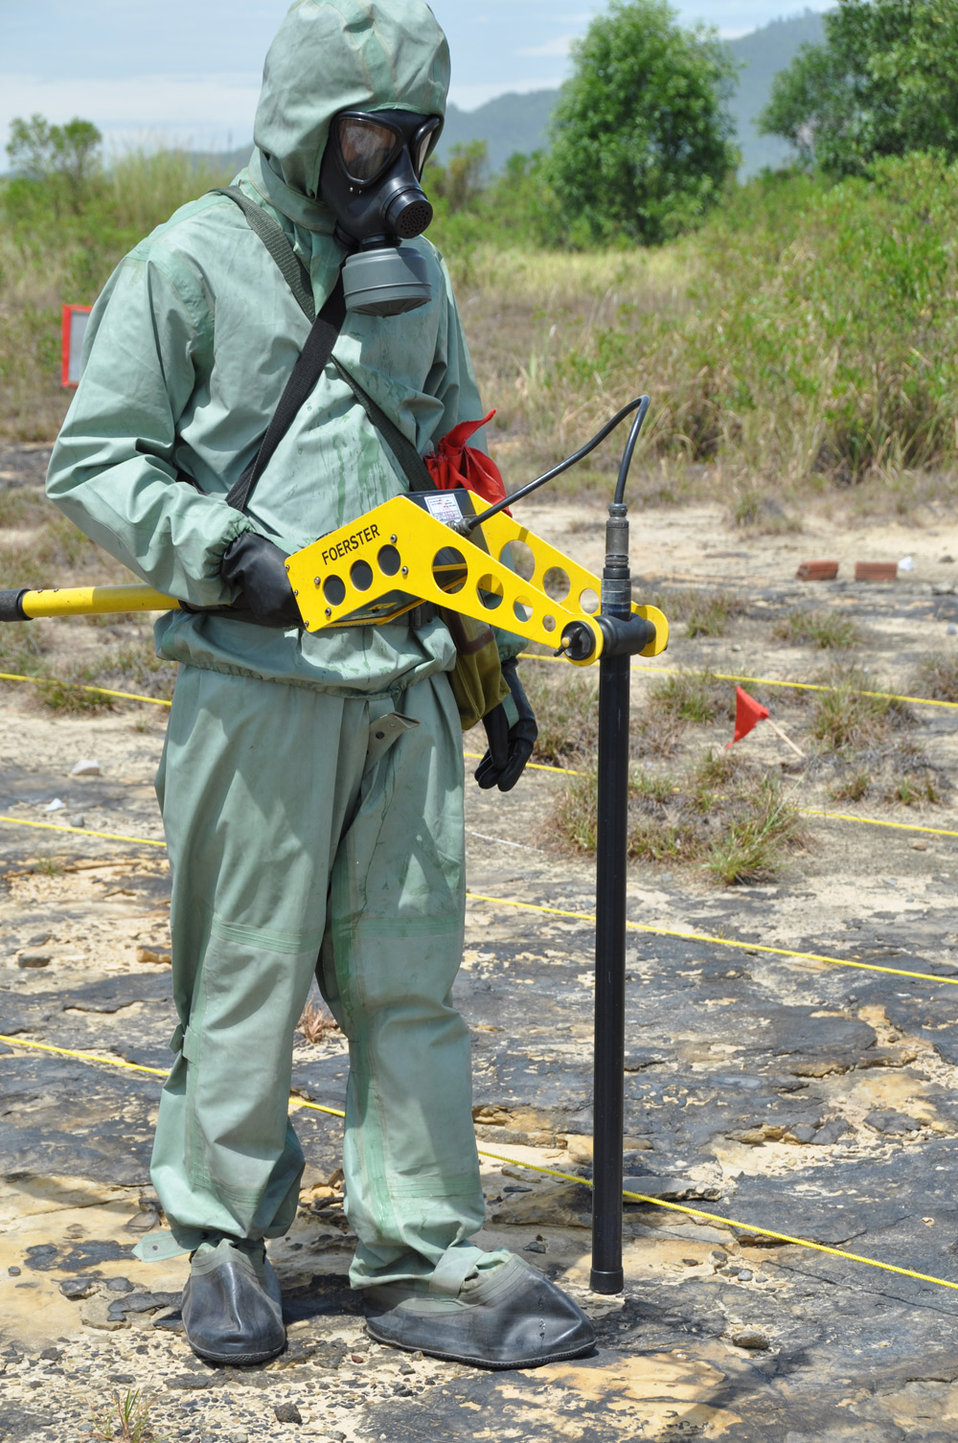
A Vietnamese soldier demonstrates UXO detection and clearance in Danang. June 17, 2011